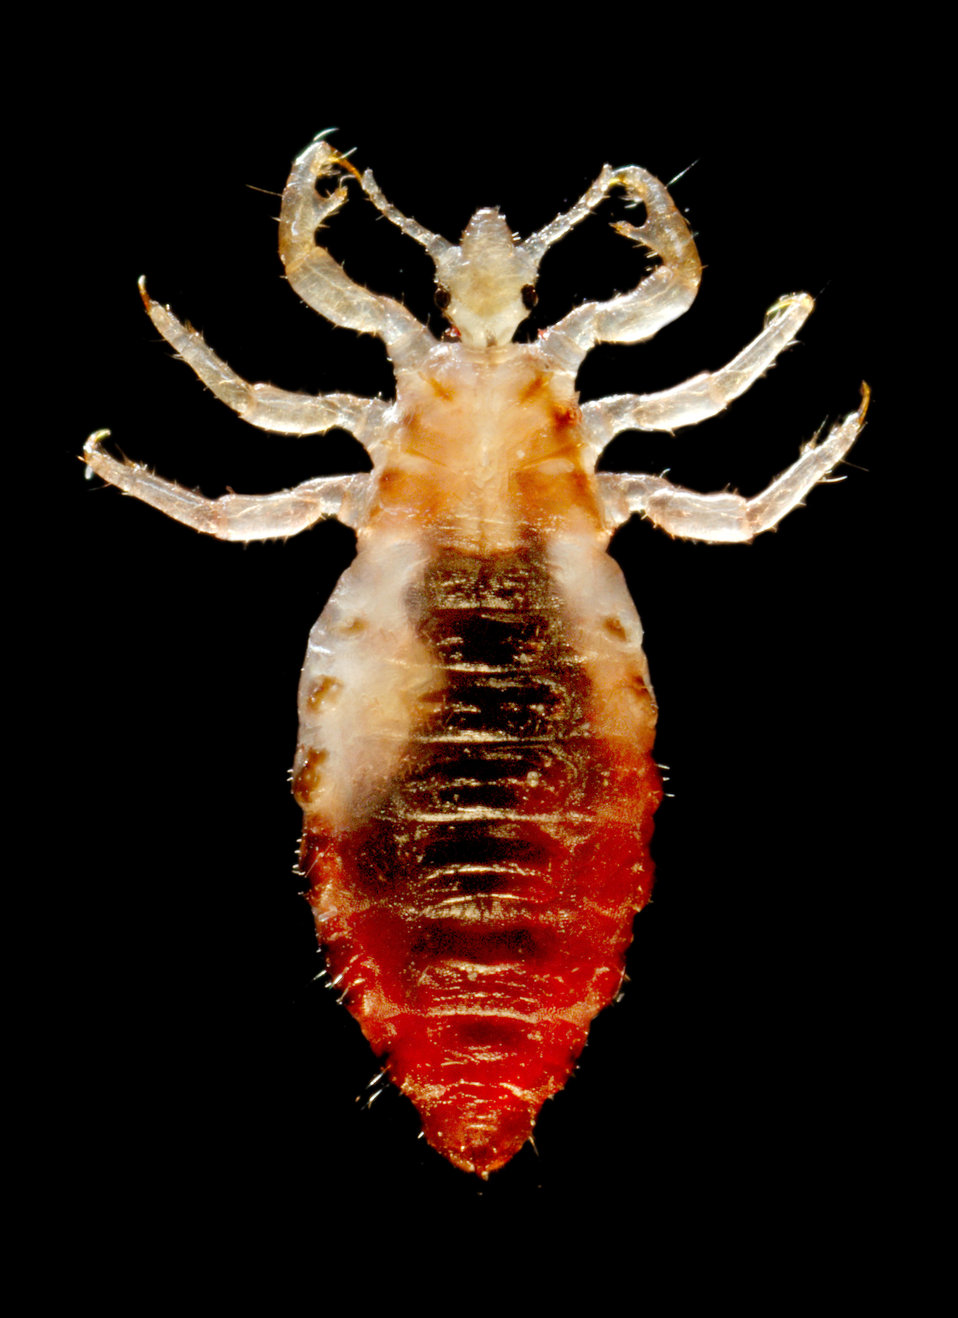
This 2006 photograph depicted a dorsal view of a male body louse, Pediculus humanus var. corporis. Some of the external morphologic features displayed by members of the genus Pediculus include an elongated abdominal region without any processes, and three pairs of legs, all equal in length and width. The distal tip of the male's abdomen is rounded, whereas, the female's (PHIL# 9202) is concave.Body lice are parasitic insects that live on the body, and in the clothing or bedding of infested humans. Infestation is common, found worldwide, and affects people of all races. Body lice infestations spread rapidly under crowded conditions where hygiene is poor, and there is frequent contact among people. Note the sensorial setae, or hairs that cover the louse's body, which pick up, and transmit information to the insect about changes in its environment such as temperature, and chemical queues. The dark mass inside the abdomen is a previously ingested blood meal.